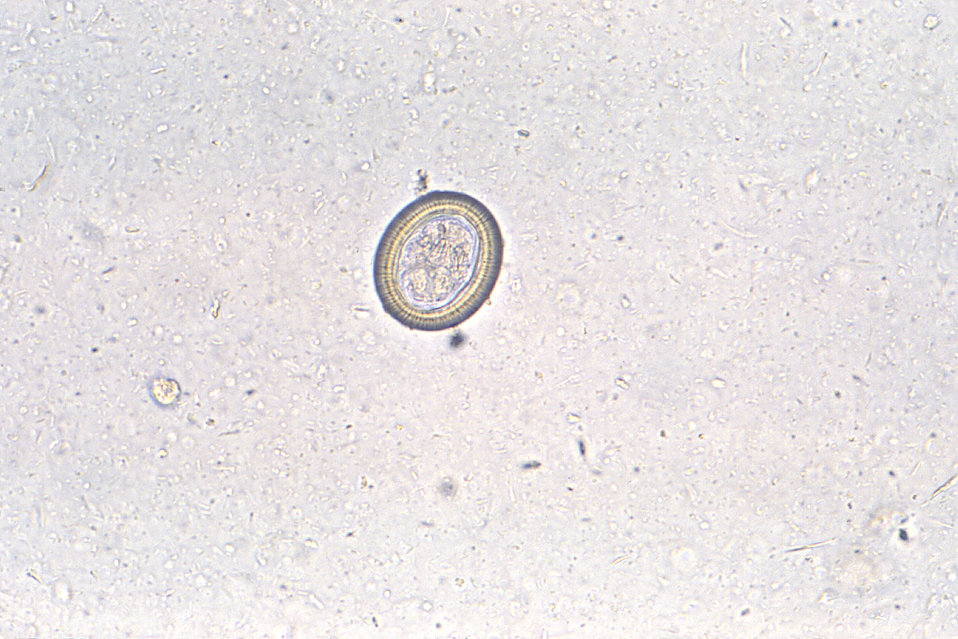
Under a relatively high magnification of 400X, this photomicrograph depicted some of the ultrastructural details exhibited by a Taenia sp. ovum, i.e., egg.